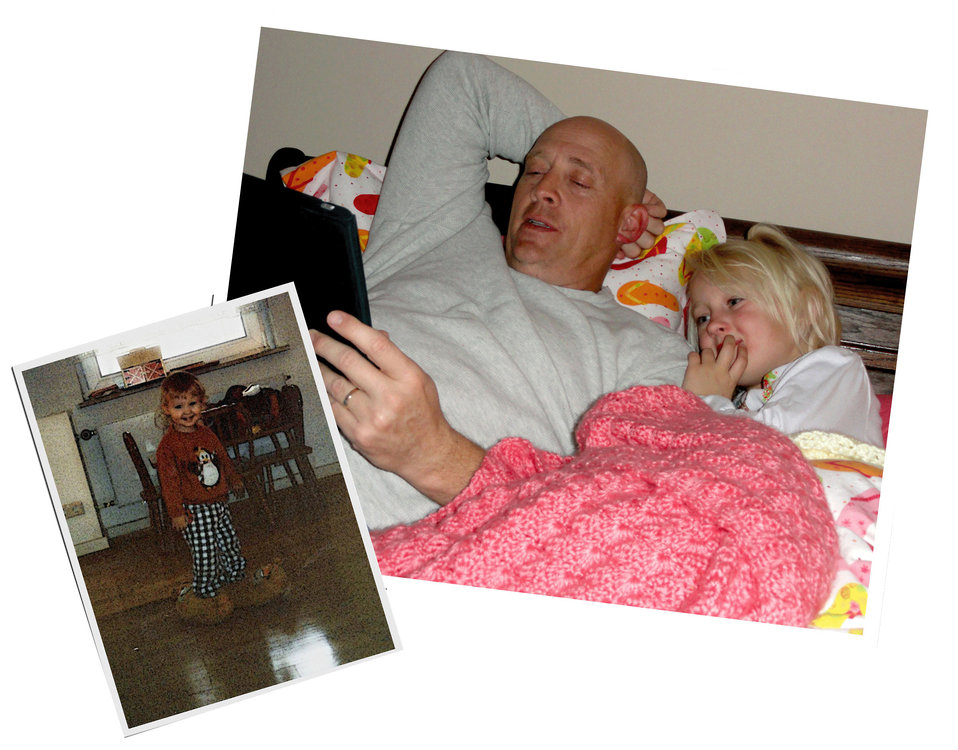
Road to CCAF

Mike Strickler, the Public Affairs director at Edwards Air Force Base, Calif., and his granddaughter, Zoe, read a bedtime story last December. Twenty-five years prior, his daughter Stephanie (below left) and son Michael motivated him to earn his first Community College of the Air Force degree.